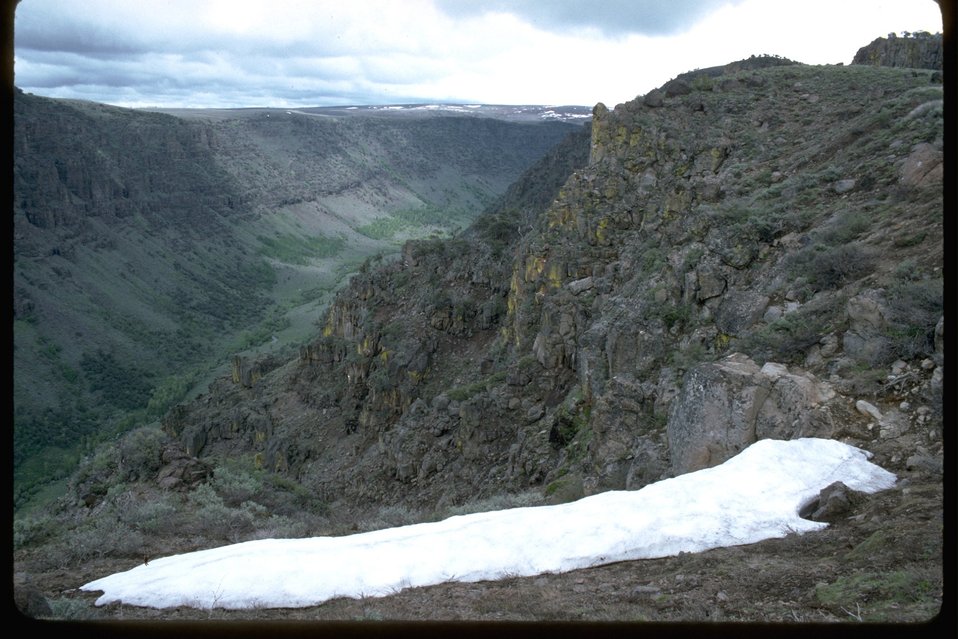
Early spring snow drift at Rooster Comb view point with a view up Little Blitzen Canyon.